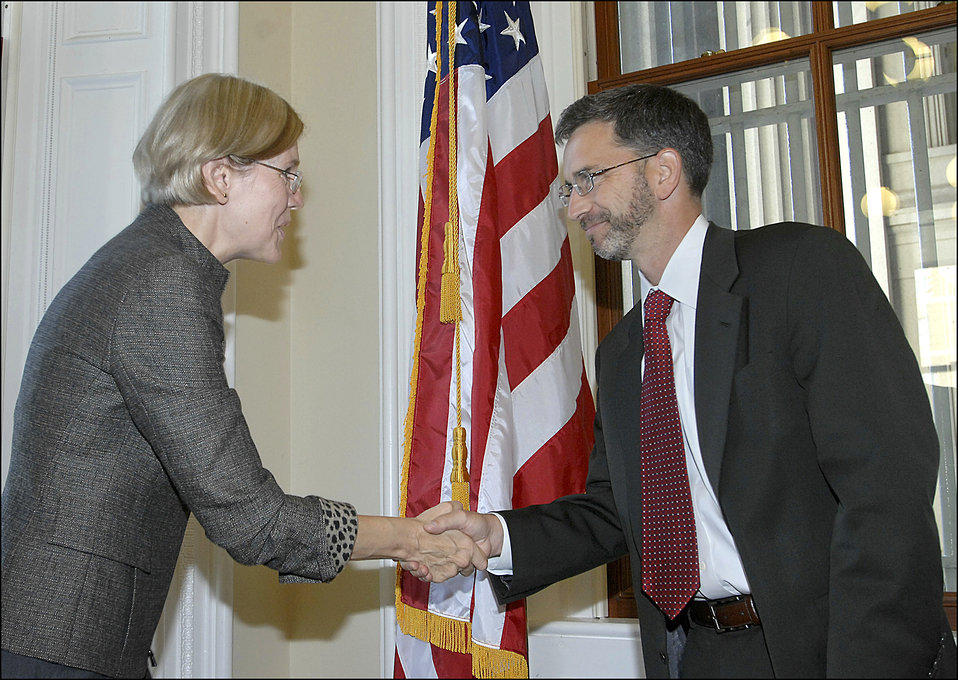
Elizabeth Warren being sworn in, 09/17/10

Professor Elizabeth Warren being sworn in as Special Advisor to the Secretary of the Treasury on the Consumer Financial Protection Bureau by Assistant Secretary for Management and CFO Dan Tangherlini at the Treasury Department on Friday, September 17, 2010.